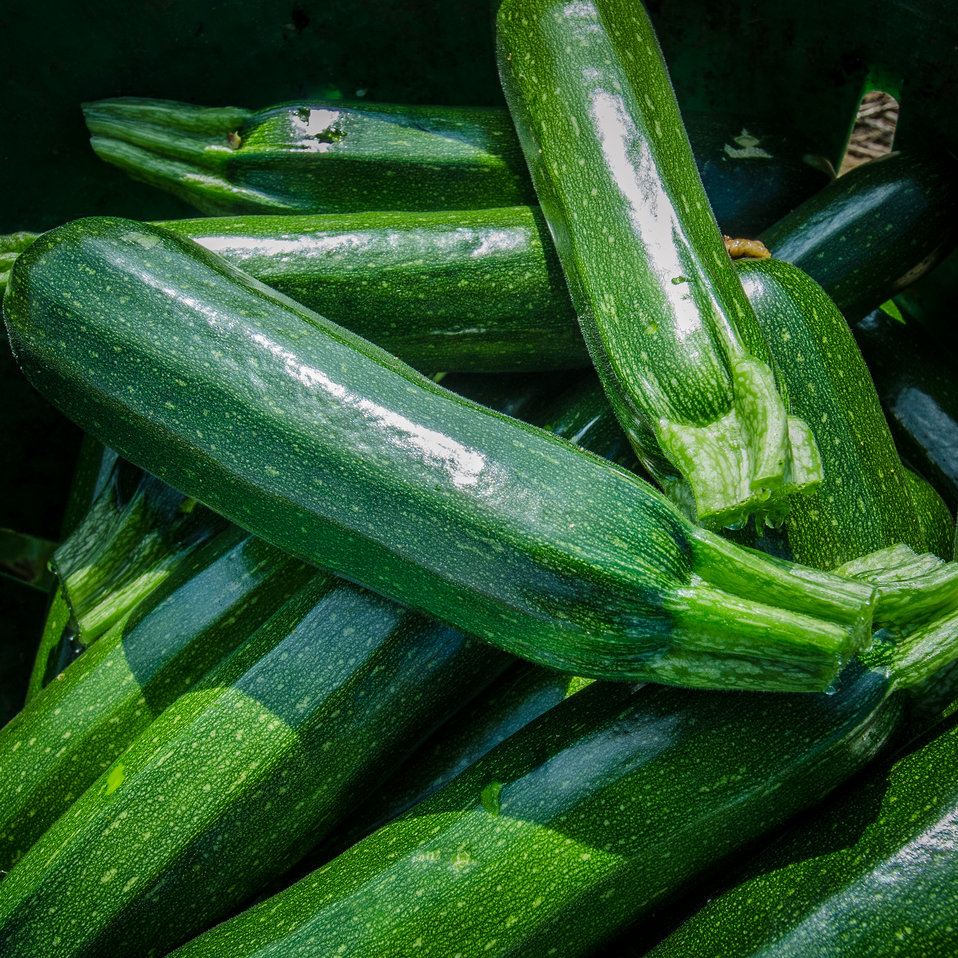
Just-picked green zucchini squash waits to be loaded onto a processing trailer at Kirby Farms in Mechanicsville, VA on Friday, Sep. 20, 2013. Migrant workers will carefully rinse and pack the fruit for shipment to wholesalers. Kirby Farms is a third-generation family farm that covers 500 acres and generates produce and grains on a year-around operation.